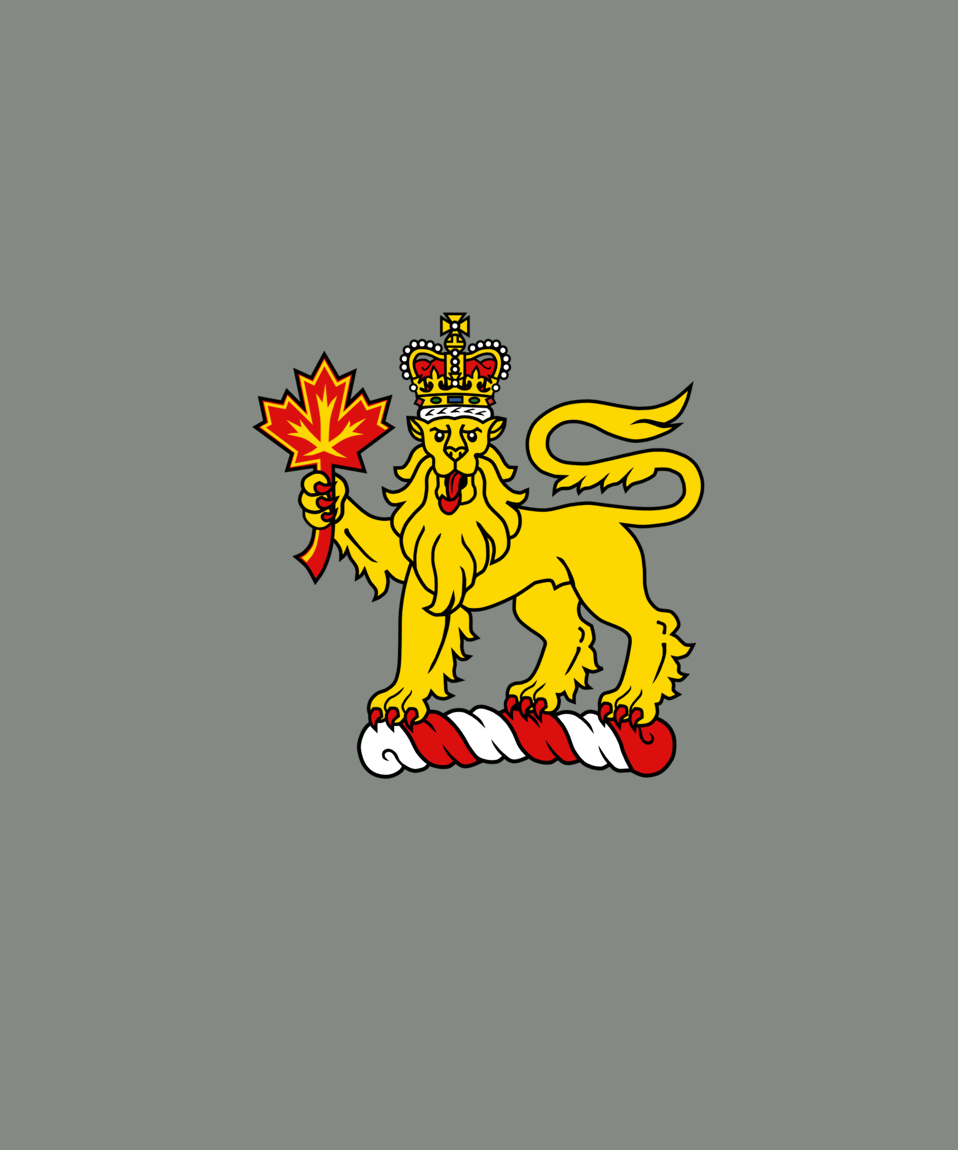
Crest of the Governor General of Canada with grey background